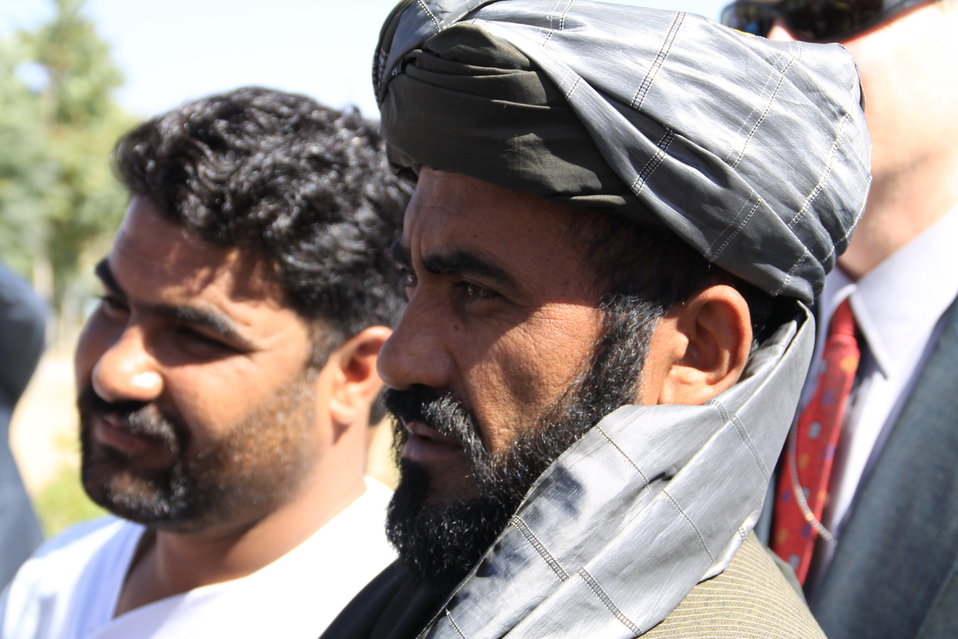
AVIPA Plus Wheat Seed Distribution 101005

US Ambassador Karl Eikenberry and USAID Acting Mission Director Kevin Brownawell joined the Minister of Agriculture, Irrigation and Livestock, H.E. Minister Mohammed Rahimi in signing a Memorandum of Understanding and distributing vouchers to area farmers for wheat and fertilizer.

US Ambassador Karl Eikenberry and USAID Acting Mission Director Kevin Brownawell joined the Minister of Agriculture, Irrigation and Livestock, H.E. Minister Mohammed Rahimi in signing a Memorandum of Understanding and distributing vouchers to area farmers for wheat and fertilizer.

US Ambassador Karl Eikenberry and USAID Acting Mission Director Kevin Brownawell joined the Minister of Agriculture, Irrigation and Livestock, H.E. Minister Mohammed Rahimi in signing a Memorandum of Understanding and distributing vouchers to area farmers for wheat and fertilizer.